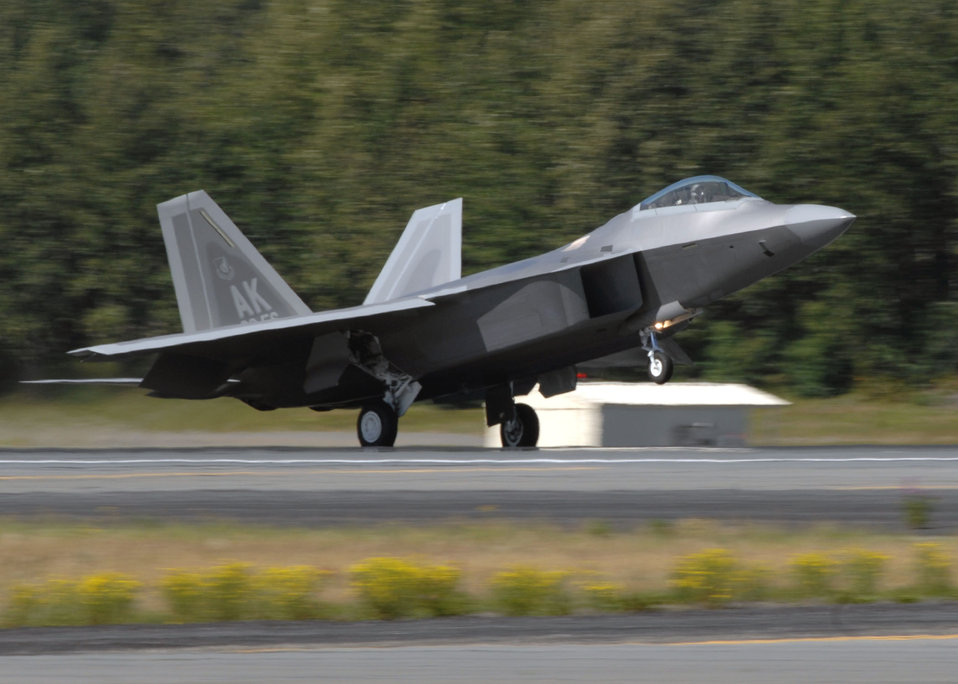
Elmendorf welcomes F-22 Raptor

An F-22 Raptor touches down at Elmendorf Air Force Base, Alaska, during a ceremony marking the aircraft's arrival Aug. 8. Elmendorf became the second operational base and the first Pacific Air Forces installation to receive the aircraft. The F-22 performs both air-to-air and air-to-ground missions allowing full realization of operational concepts vital to the 21st century Air Force.